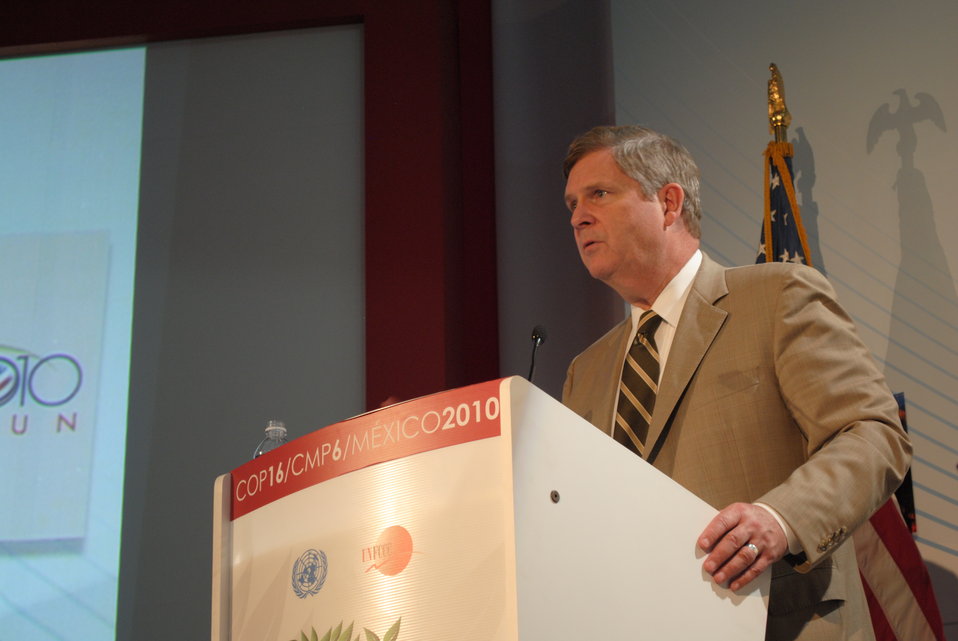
Secretary Vilsack Describes How the USDA Is Addressing Climate Change

U.S. Secretary of Agriculture Tom Vilsack describes how the U.S. Department of Agriculture is taking actions to meet the challenge of climate change at the U.S. Center at COP-16 in Cancun, Mexico, on December 9, 2010.